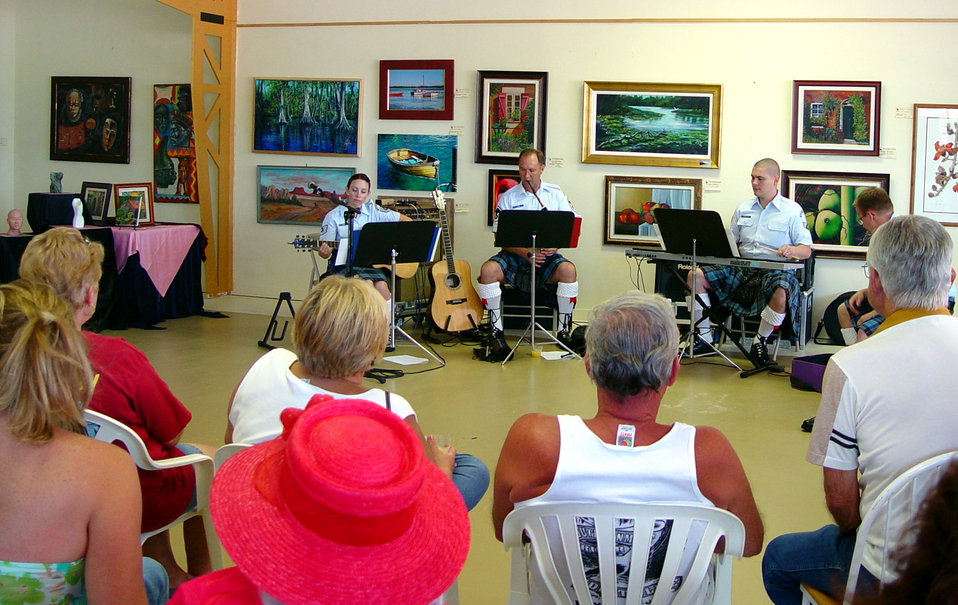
Air Force Reserve Band spreads goodwill

Members of the Band of the Air Force Reserve's Celtic ensemble, Southern Aire, perform at the Studio 100 art gallery in Florida City, Fla. on May 20, 2006. The Band of the Air Force Reserve, from Robins Air Force Base, Ga., performed nine times in South Florida as part of a community outreach project.